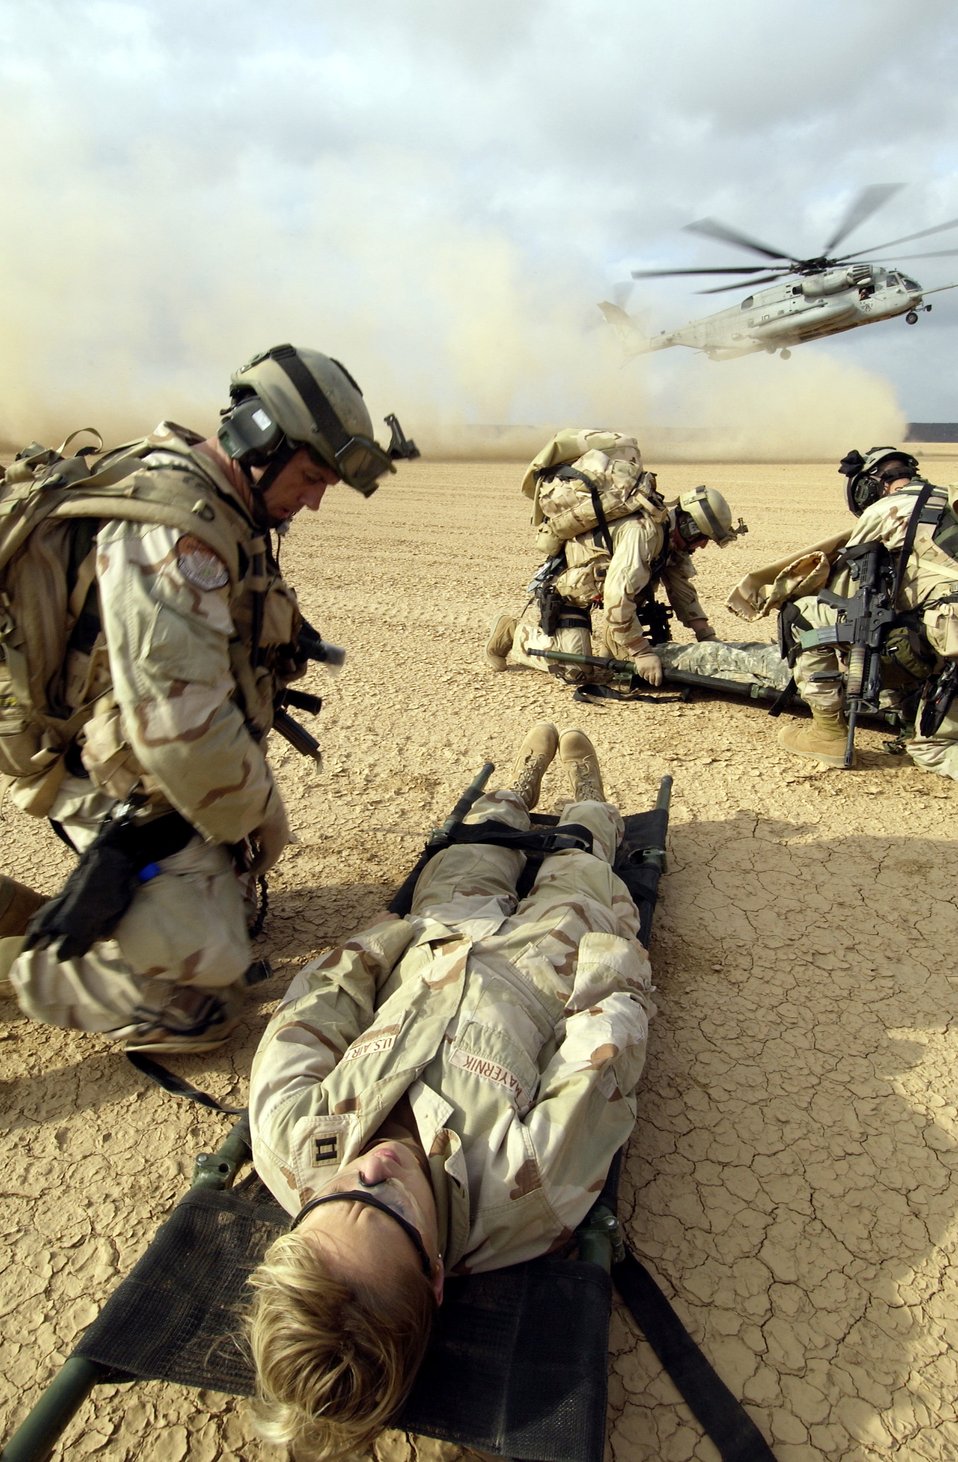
Search and rescue

CAMP LEMONIER, DJIBOUTI, Africa (AFPN) -- Air Force pararescuemen secure “injured” patients on stretchers before they are transported on a Marine CH-53 Super Stallion helicopter as part of a search and rescue exercise Feb. 8.